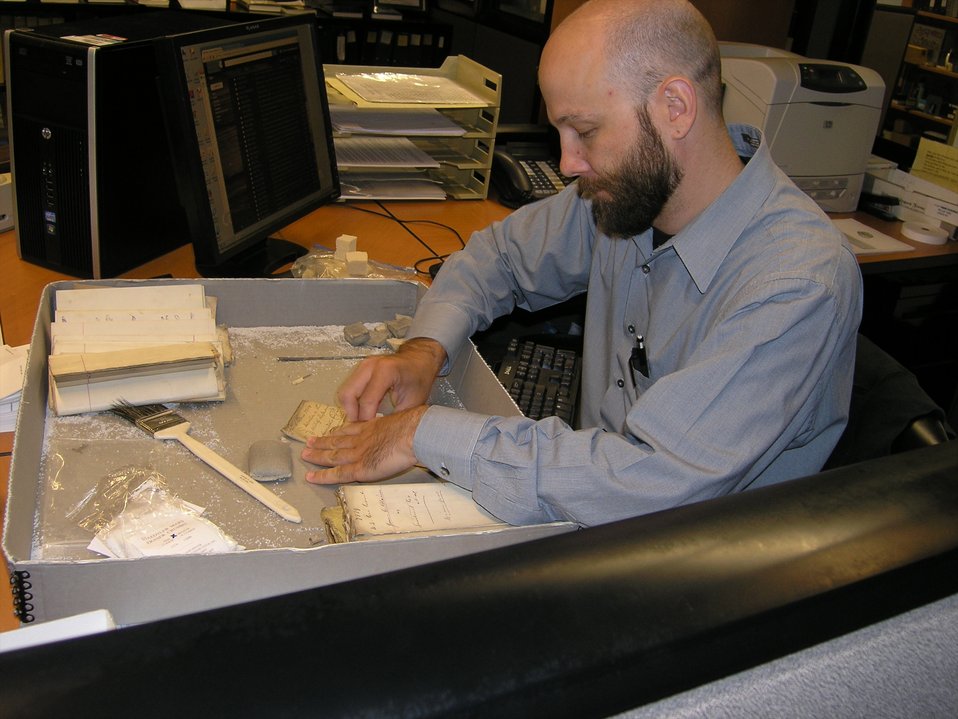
Devon McKeown cleaning archival records; Location: National Archives at Chicago, Chicago, IL